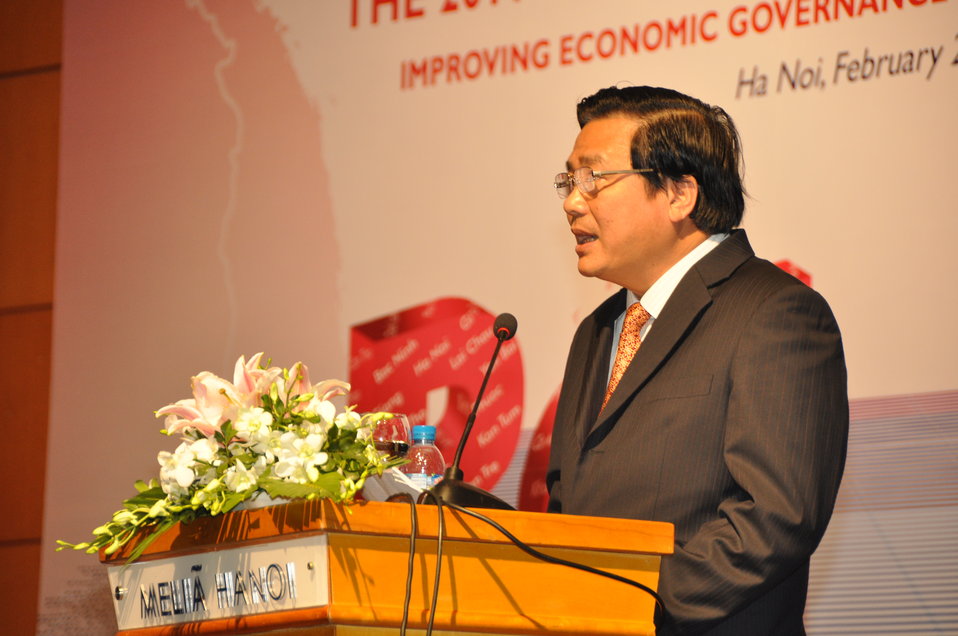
Provincial Competitiveness Index 2011 Launch